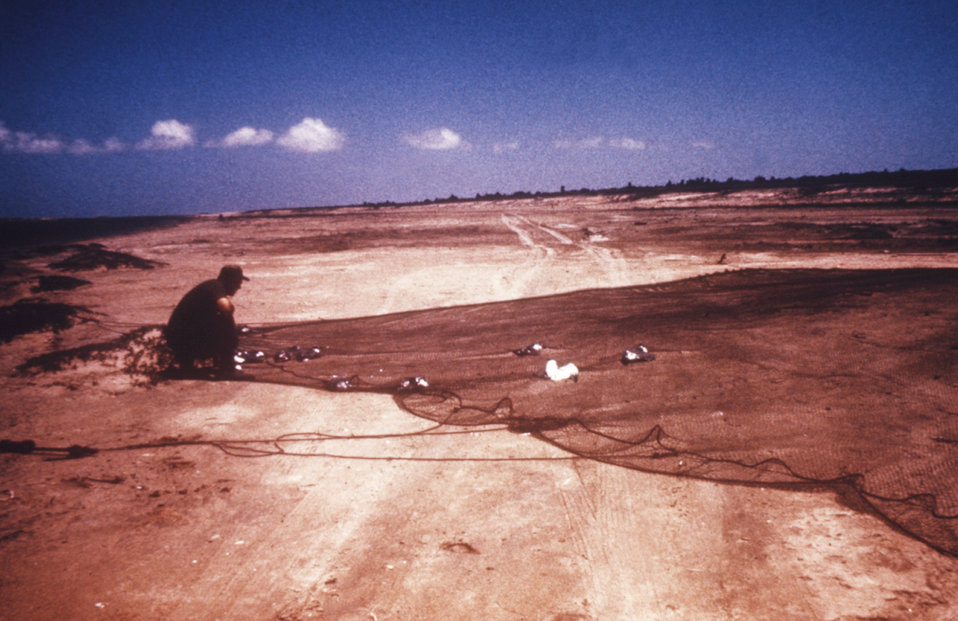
This individual will use this cannon-net when capturing large birds during arbovirus field studies.